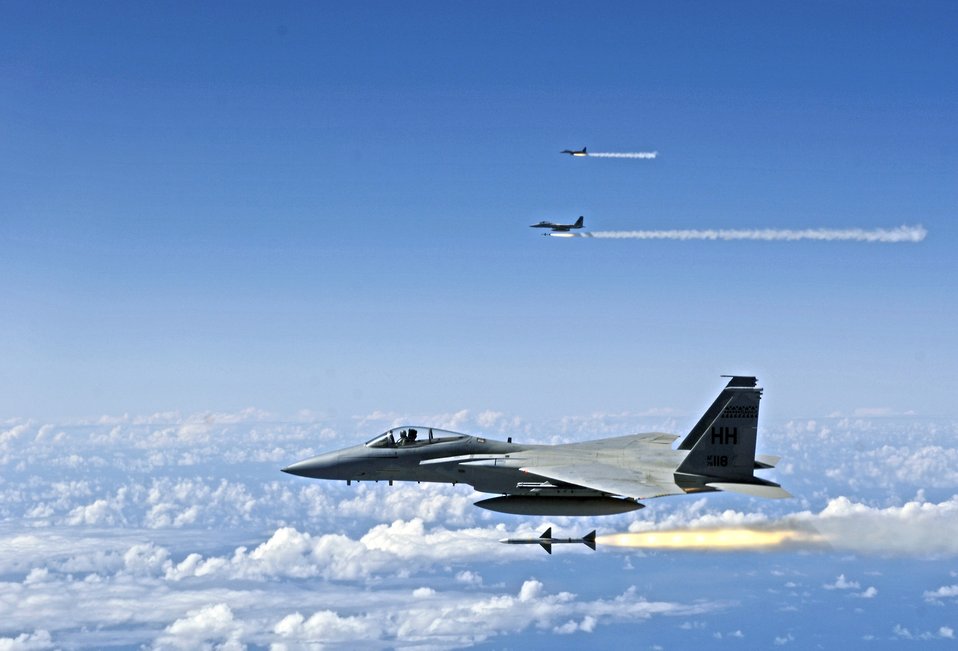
Total force at work in RIMPAC

F-15 Eagles fire AIM-7 Sparrow missiles at a tactical air-launched decoy off the coast of Hawaii on July 16 during the Rim of the Pacific Exercise 2006. The F-15s are from the Hawaii Air National Guard's 199th Fighter Squadron.